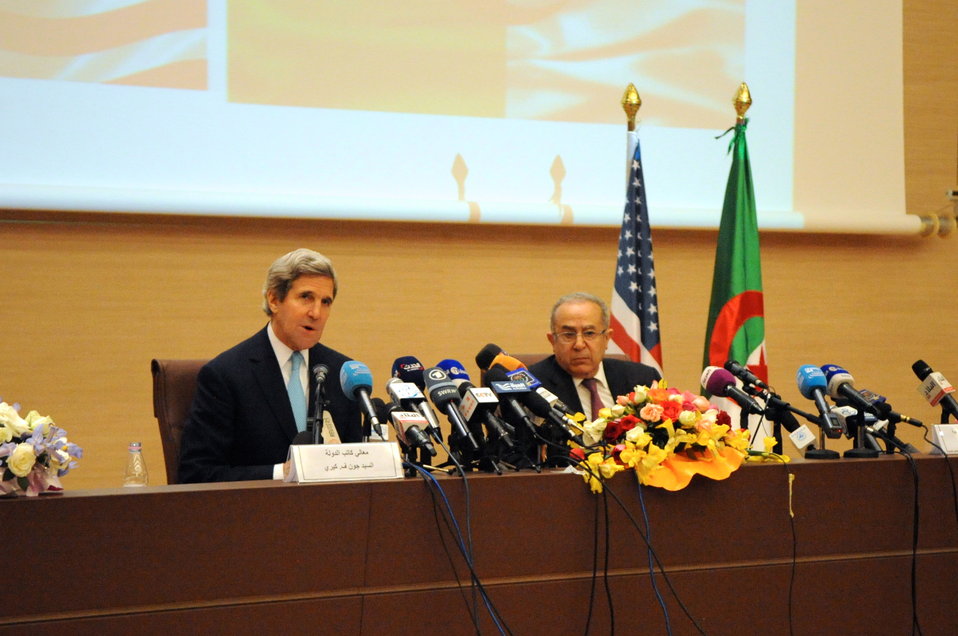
Secretary Kerry Answers Question During Joint News Conference in Algiers

U.S. Secretary of State John Kerry answers a question asked of him during a joint news conference with Algerian Foreign Minister Ramtane Lamamra after a Strategic Dialogue between their two countries at the Ministry of Foreign Affairs in Algiers on April 3, 2014.